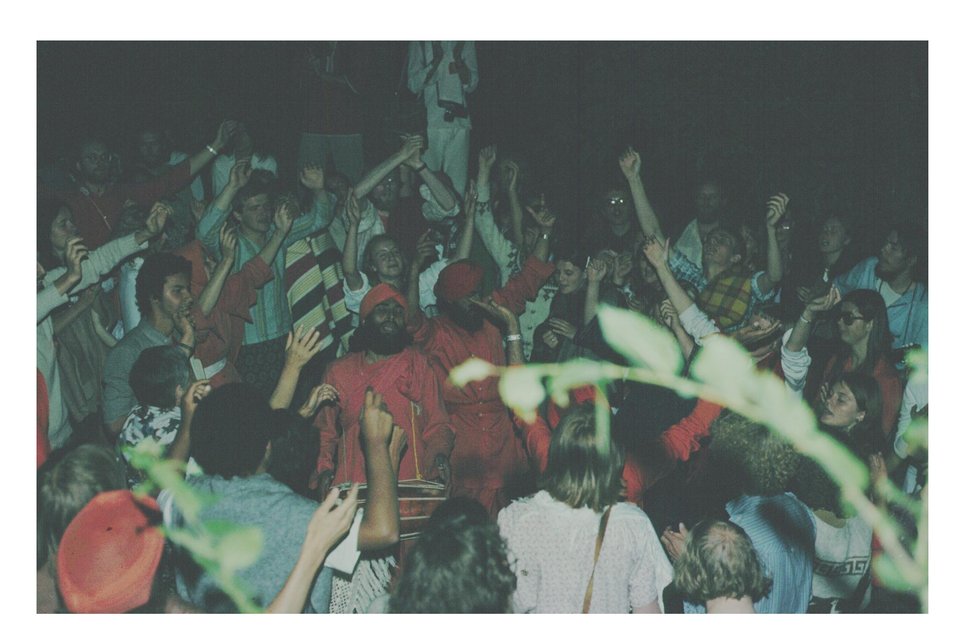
Historical photo representing a group of Ananda Margis singing Kiirtan on 1978 in occasion of Shrii Shrii Anandamurti's liberation.